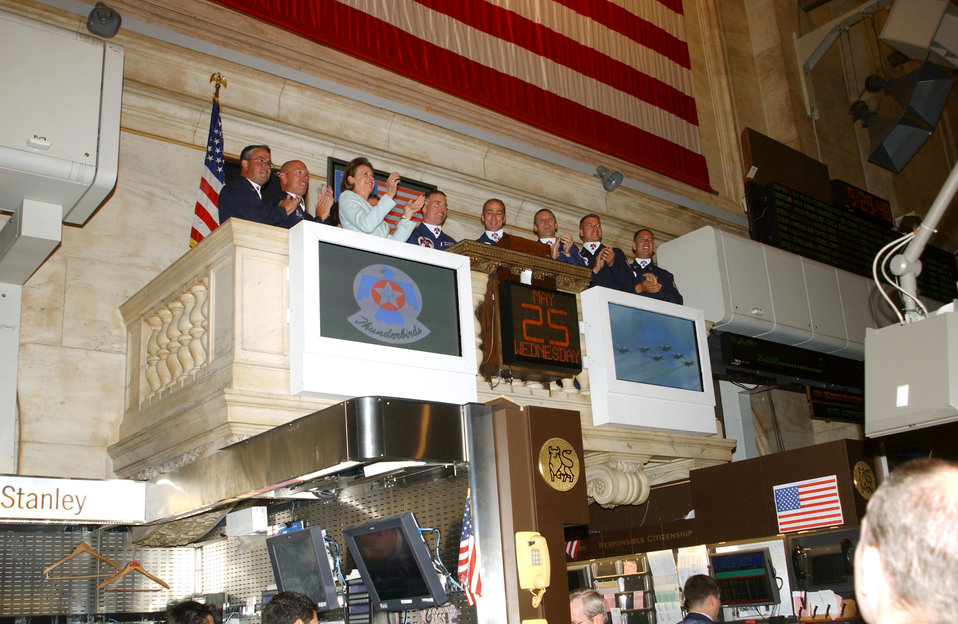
They love New York

NEW YORK -- U.S. Air Force Thunderbirds aerial demonstration team members ring the opening bell at the New York Stock Exchange on May 25 while here for an air show over Long Island.